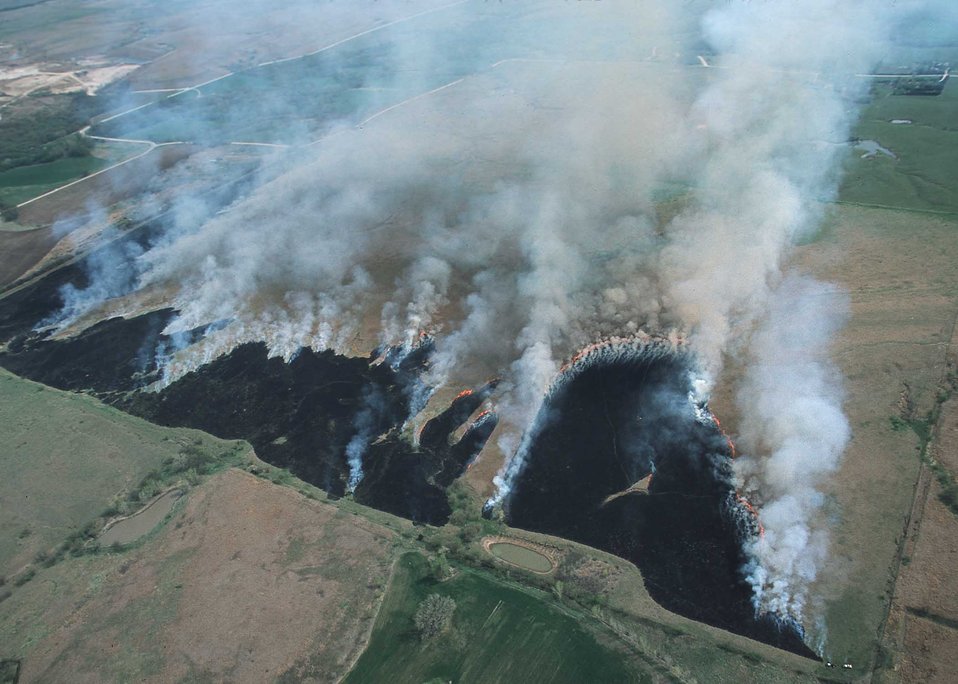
Prairie burn to stimulate new growth and recycle nutrients. Konza Biological Research Station, Manhattan, KS.